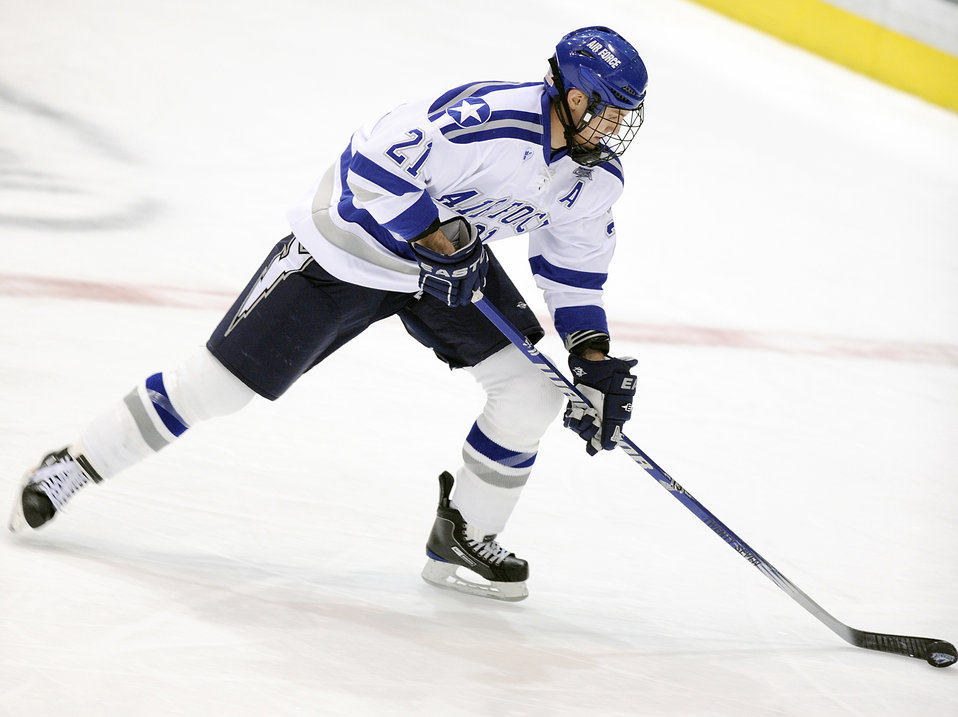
Falcons outskate UConn Huskies

Air Force Academy junior forward Jacques Lamoureux controls the puck as the Falcons beat the University of Connecticut 2-1 at the Academy's Cadet Ice Arena Jan. 8, 2010. The following evening, Lamoureux scored twice as Air Force and UConn skated to a 2-2 overtime tie. Air Force fell into a tie for second place in the Atlantic Hockey Association as the Falcons' record stands at 9-8-5 overall and 9-4-5 in the AHA.